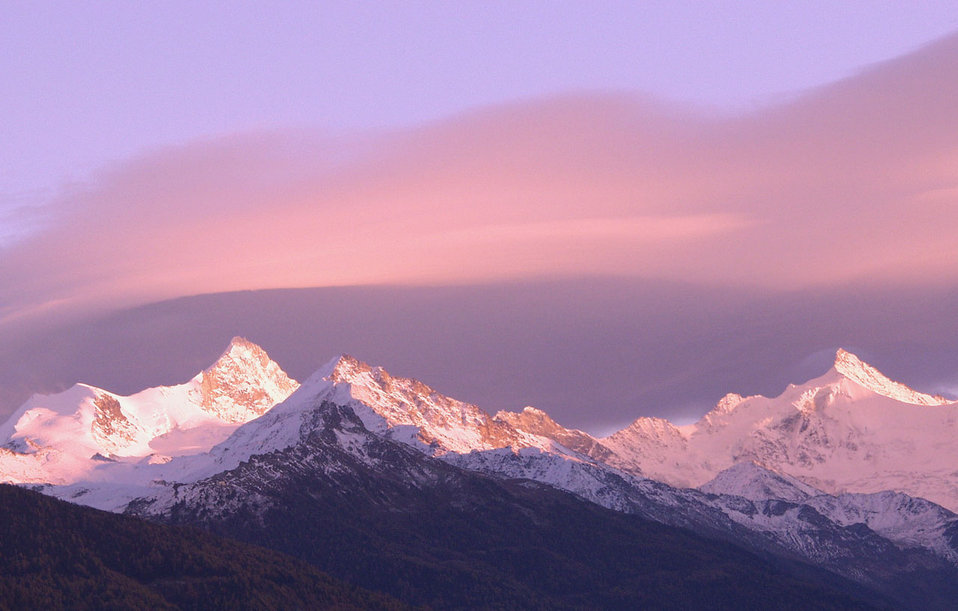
Crans montana

Alpine sunset.